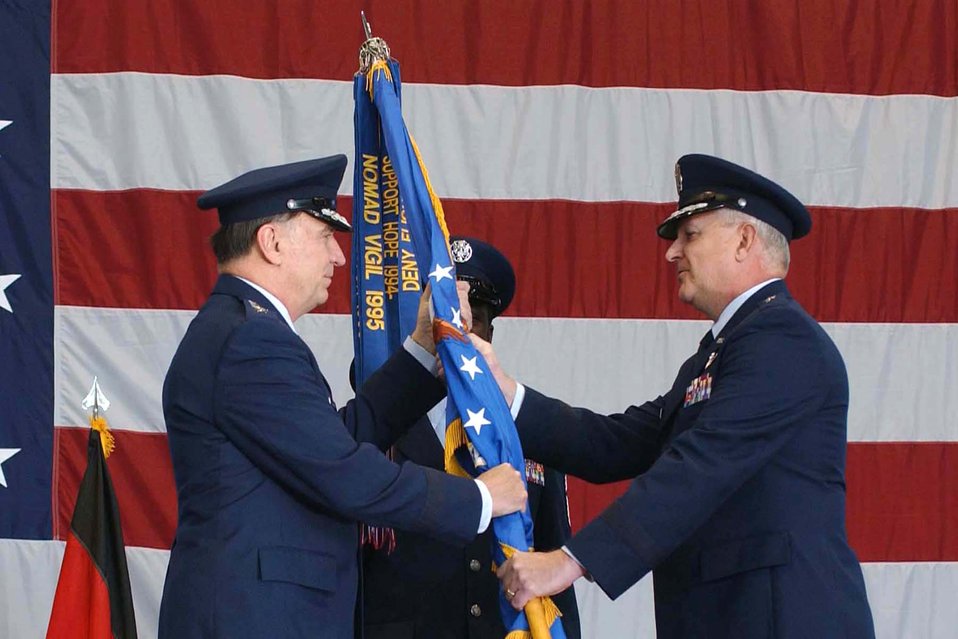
3rd Air Force reactivation

With the inactivation of 16th Air Force and the reactivation of 3rd Air Force, Maj. Gen. Paul J. Fletcher (right), 16th Air Force commander, relinquishes command, passing the 16th AF flag to Gen. William T. Hobbins, U.S. Air Forces in Europe commander, during the reactivation ceremony at Ramstein Air Base, Germany, Dec. 1. The responsibilities of 16th AF will be assumed by 3rd AF.